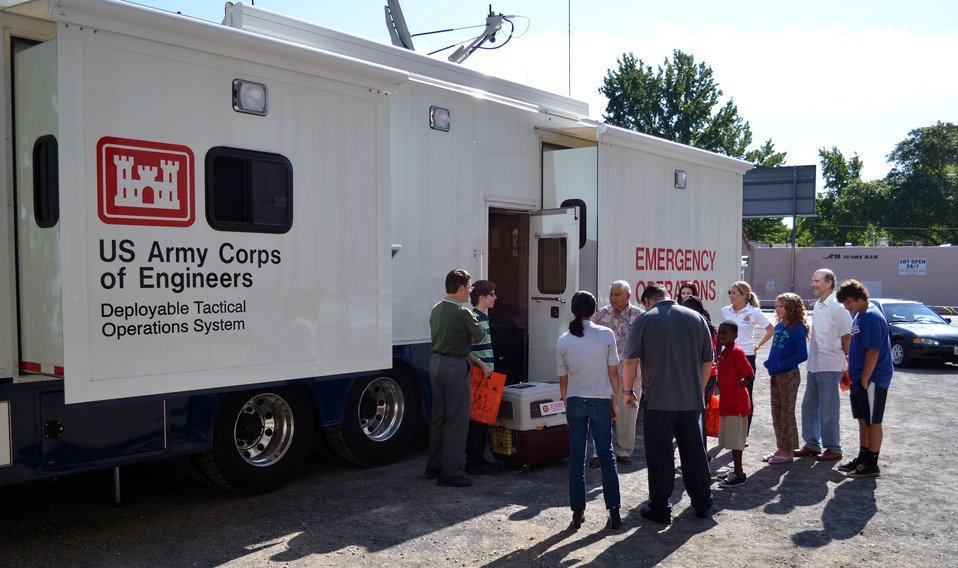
“Bring Your Child to Work Day” promotes science and technology jobs

Gary Fong, an emergency management specialist with the U.S. Army Corps of Engineers Sacramento District, describes the features of an emergency command center vehicle during the “Bring Your Child to Work Day” event at district headquarters Aug. 8, 2013 in Sacramento, Calif. The district hosted the event to encourage kids to pursue careers in science, technology, engineering and mathematics, or STEM.